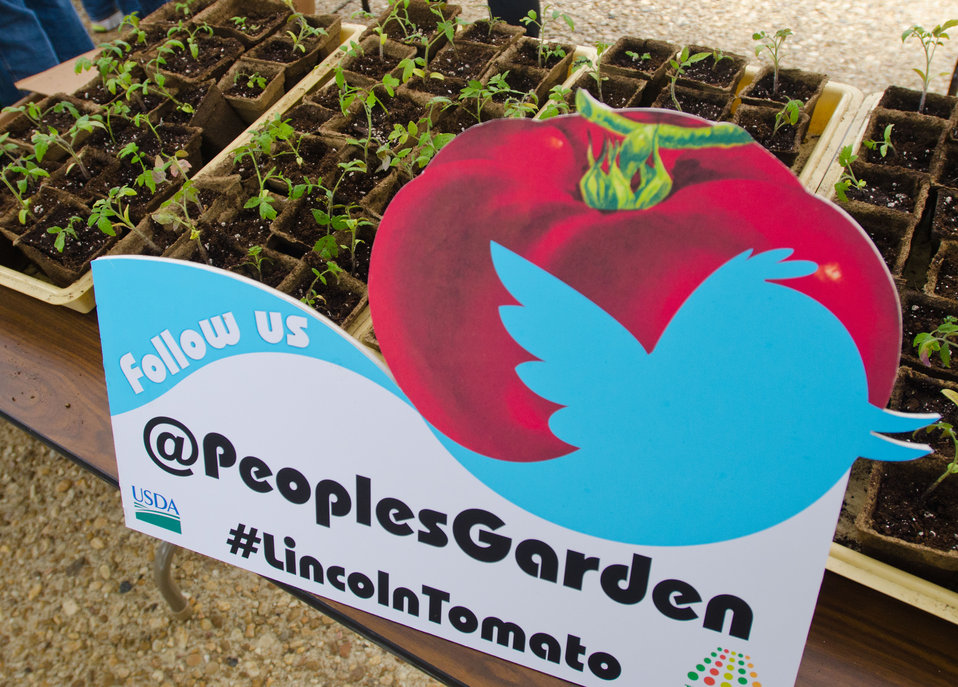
A sign encourages people to share their tomato growing experience via twitter #LincolnTomato, during the People’s Garden Initiative and volunteer Executive Master Gardeners distribution event with ‘Abraham Lincoln” Tomato seedlings that the People’s Garden Initiative is distributing to USDA employees in celebration of the 150th Anniversary of the U.S. Department of Agriculture, on Tuesday, May 15, 2012 in Washington, D.C., on this day, 150 years ago, President Abraham signed the Department into existence during the Civil War. In 1923 the H.W. Buckbee seed company of Rockford, Illinois introduced an heirloom variety named in honor of Illinois’ Greatest Son – Abraham Lincoln. The plant produces large beefsteak tomatoes in about 90 days. Volunteer Executive Master Gardeners planted and cultivated more that 3,000 seedlings ranging in size from one inch to more than a foot tall, so people could choose the best ones to transport home and to stagger the harvest by selecting a small and large seedling. One of the hopes of this event is to share the joys of gardening and harvesting, as well as the opportunity to share your harvest in your community. Seed packets are being distributed to People’s Gardens worldwide.